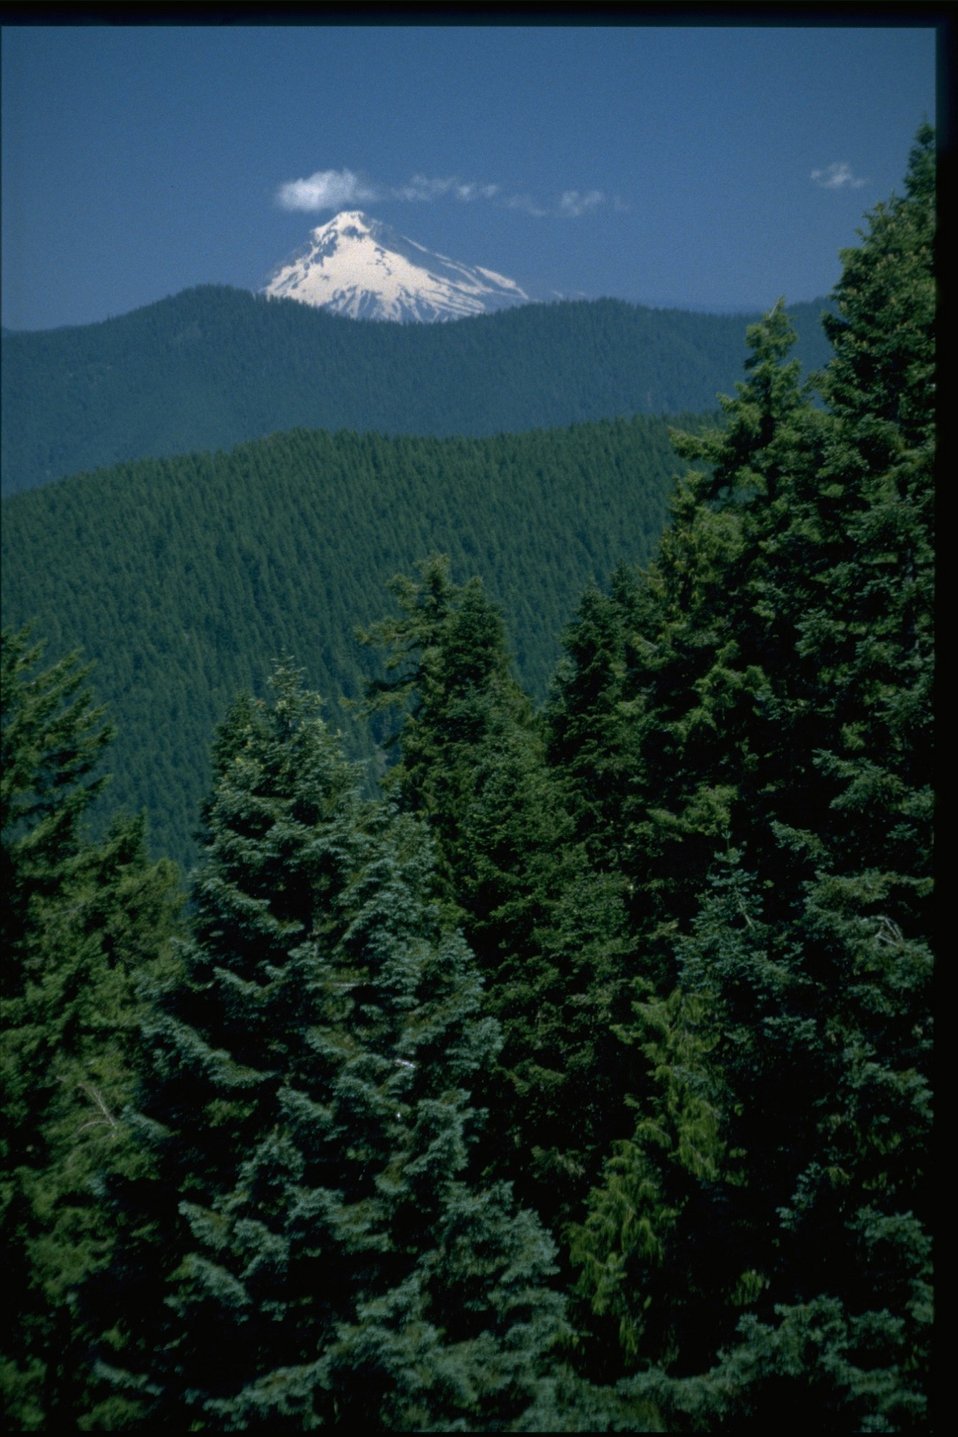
Scenic view from Mt. Horeb, Mt. Hood in the distance.